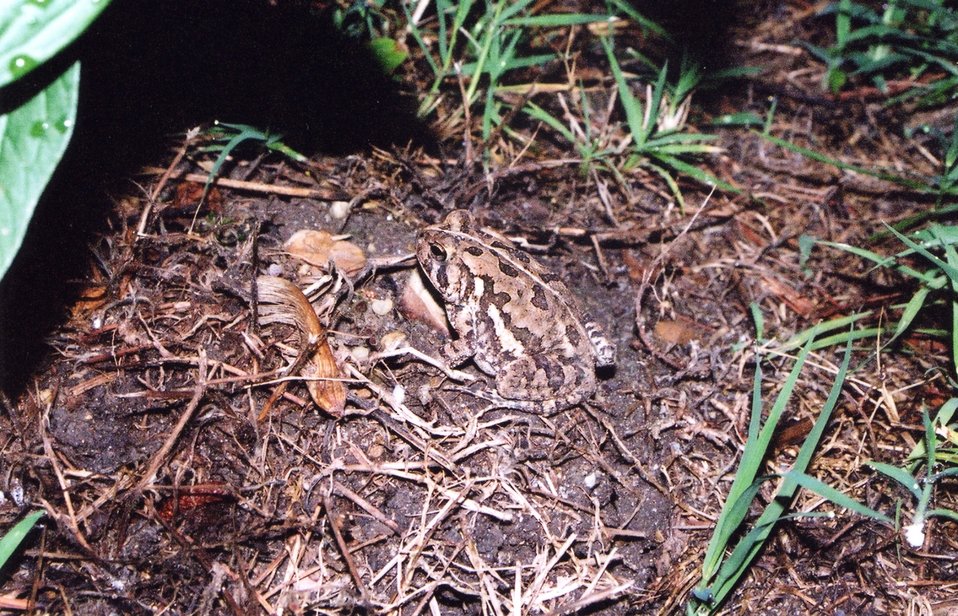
A little beach toad blends in well with its surroundings.